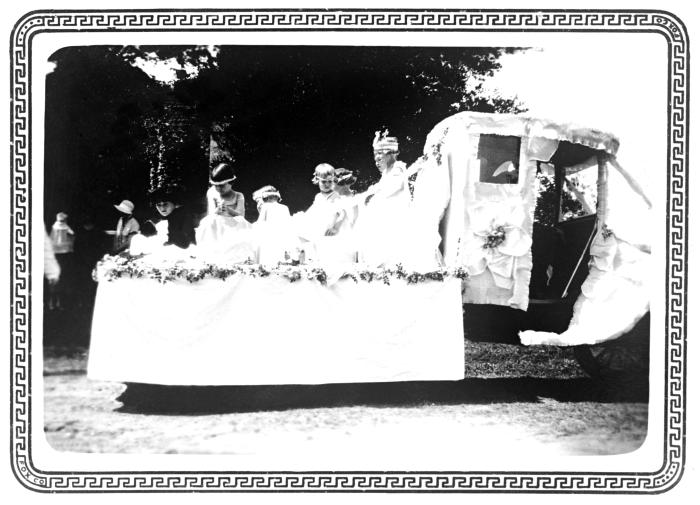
In this historic photograph, school children can be seen aboard a parade float in the state of Texas, during a celebration marking the observance of 'Child Health Day'. The original image was scanned from a glass lantern slide donated by the Minnesota Department of Health, and is one of a historical collection of documents and photographs devoted to observances of Child Health Day in the United States.